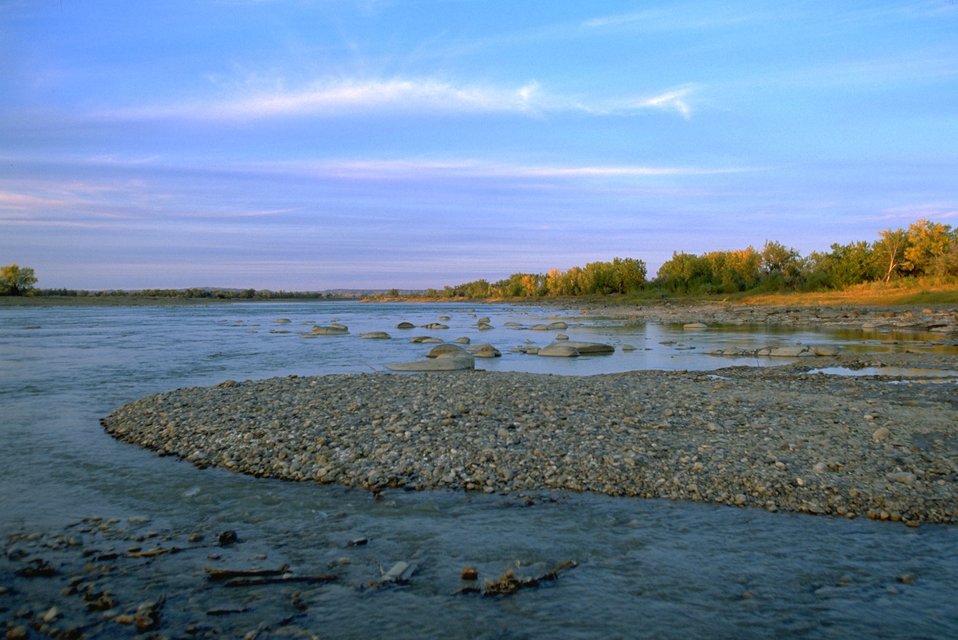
Yellowstone River near Matthews Recreation Site